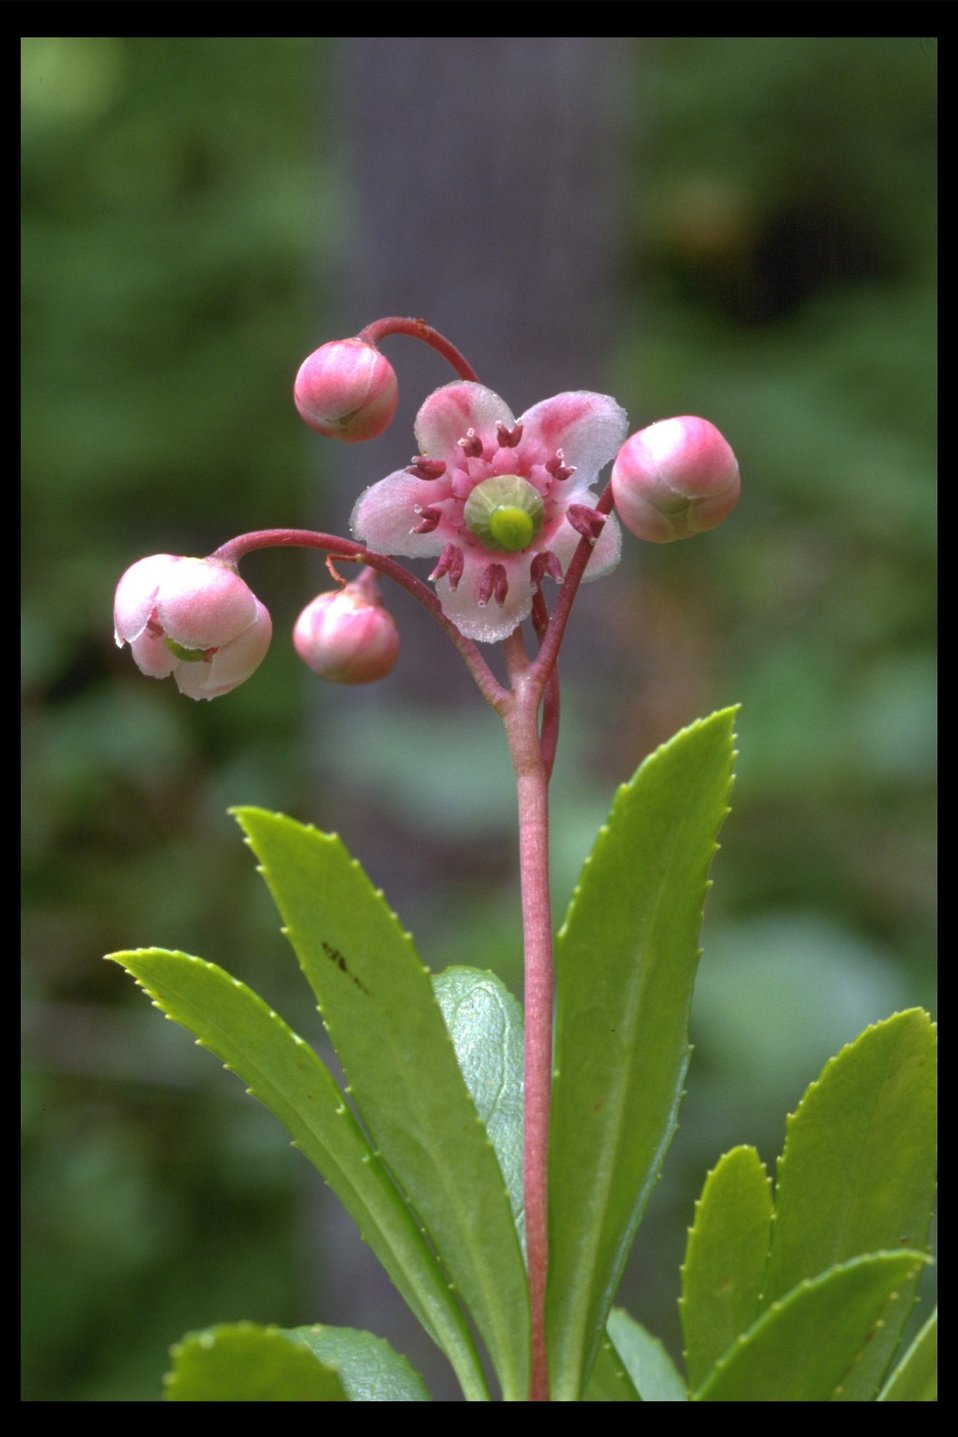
Close up shot of Western Prince's Pine, or called Pipsissewa (Chimaphila umbellata) at Upper Trail Creek.